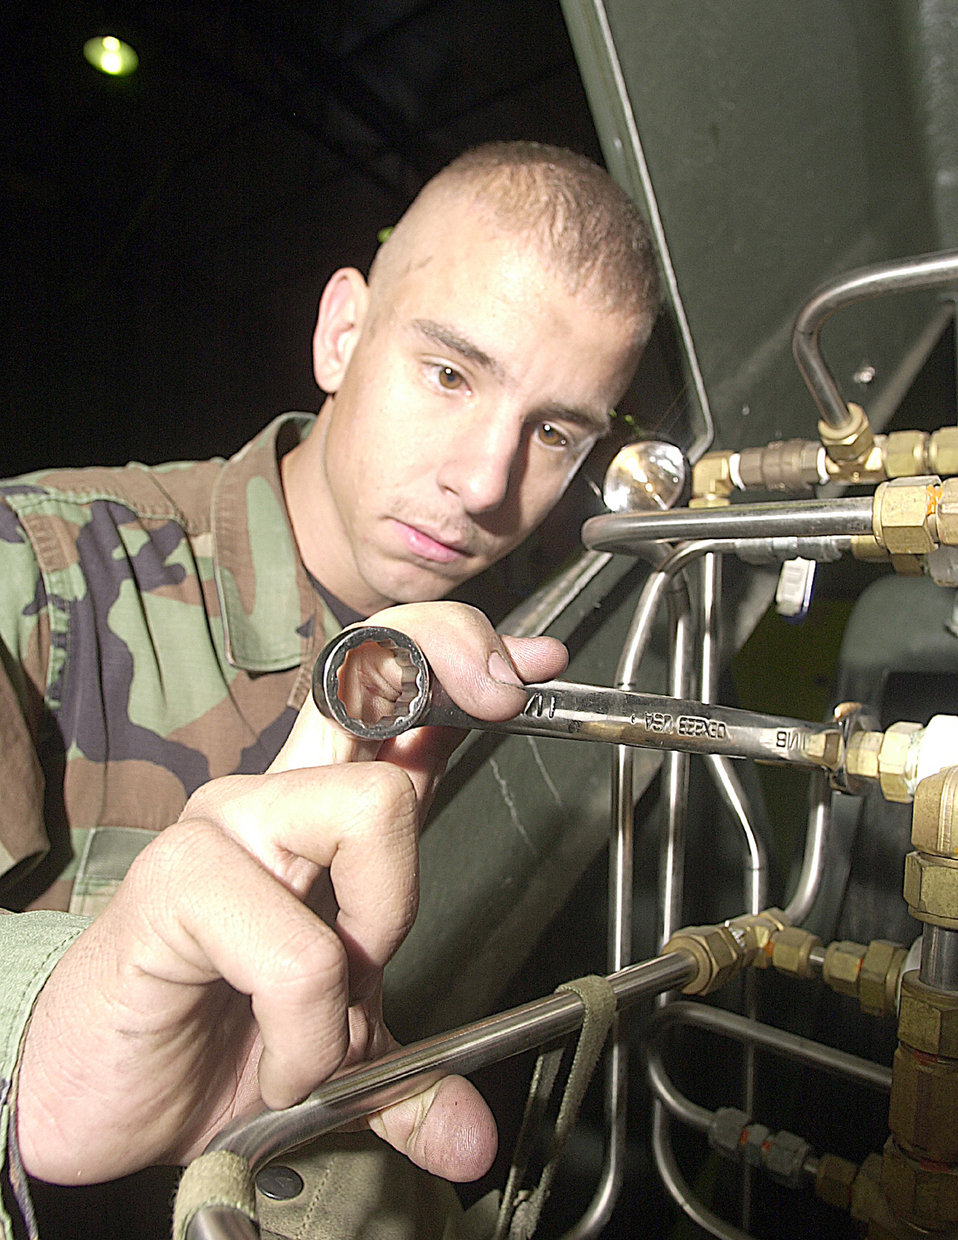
A little tighter

INCIRLIK AIR BASE, Turkey -- Airman Brian Thorne maintains a self-generating nitrogen cart here. Thorne is assigned to the 39th Maintenance Squadron's aerospace ground equipment flight.